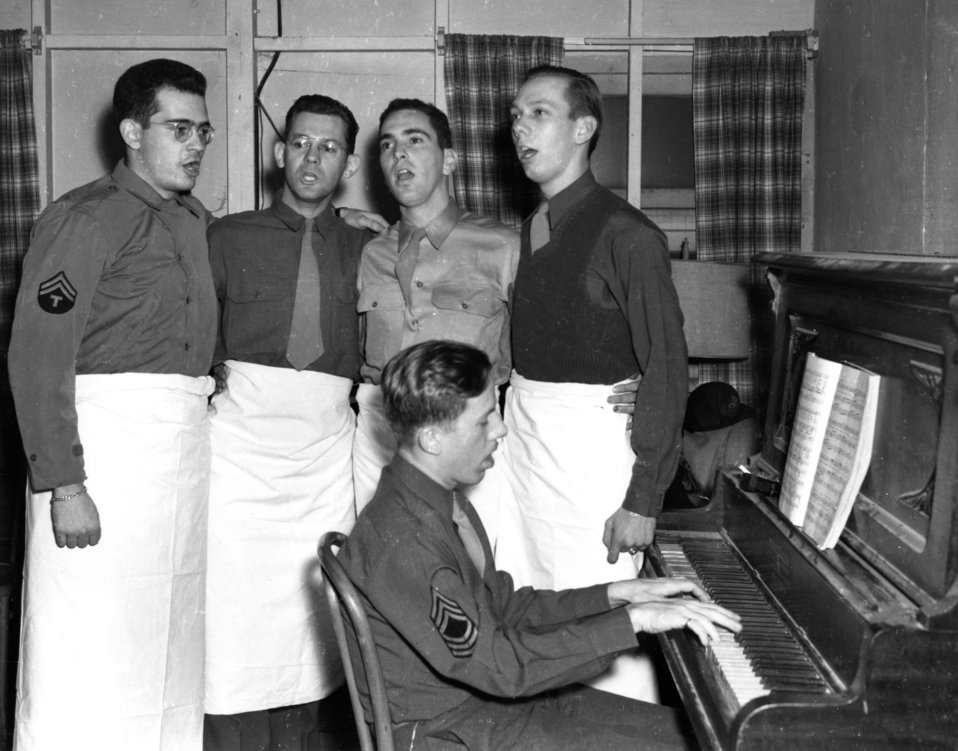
Army Activity at Oak Ridge